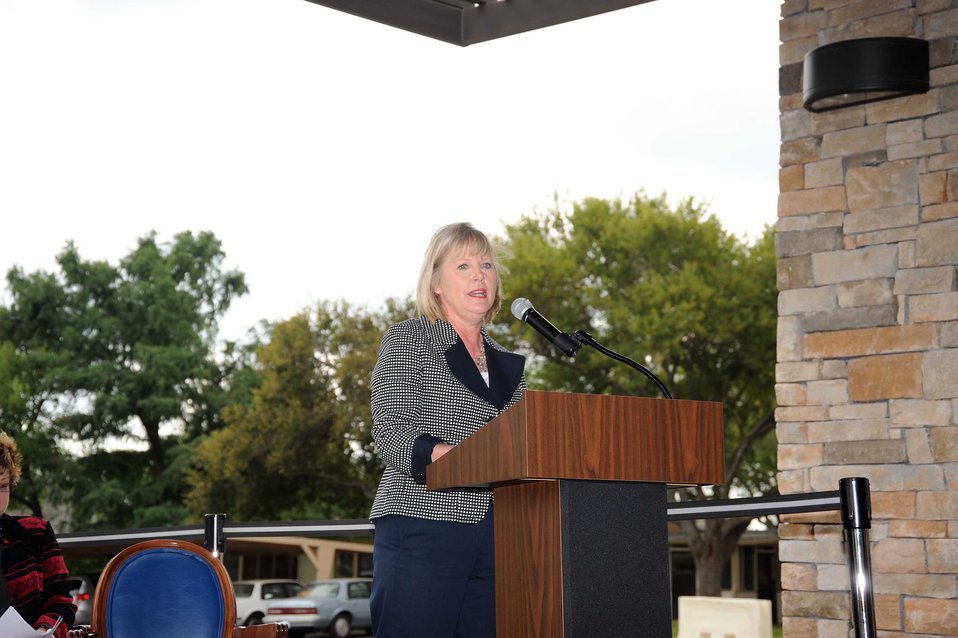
Air Force Village rededicated during special ceremony

Suzie Schwartz speaks at the Air Force Village I rededication ceremony in San Antonio on Oct. 22, 2010. The Air Force Villages are a San Antonio-based community for America's retired military officers and spouses. Earlier that day, Mrs. Schwartz, the wife of Air Force Chief of Staff Gen. Norton Schwartz, toured Air Force Village I, which has undergone a massive re-construction project to modernize and update the facility.